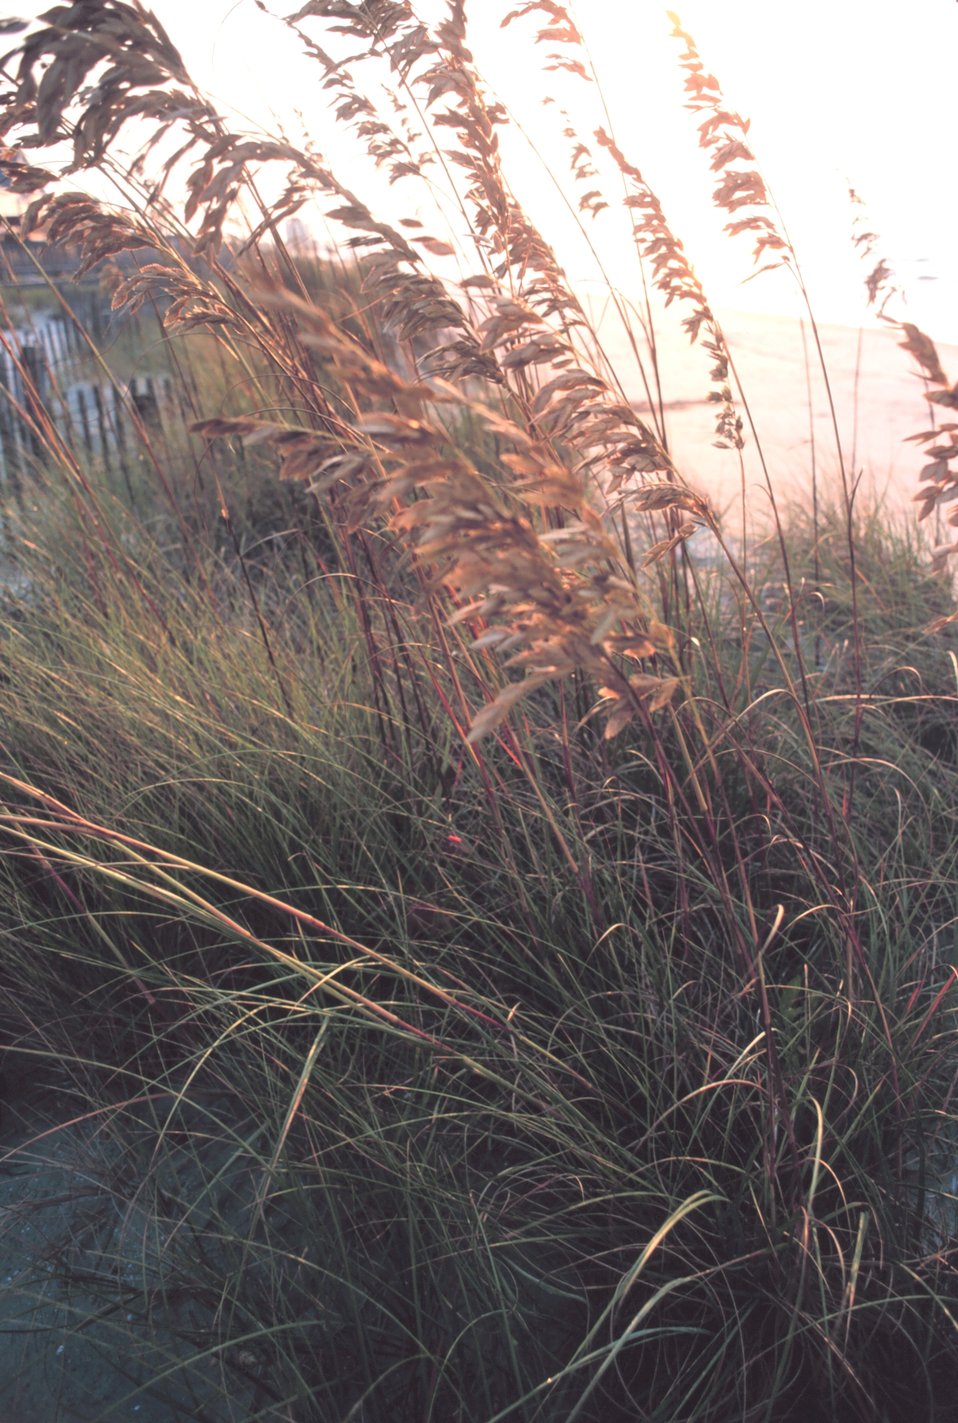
Sea oats in the morning sun